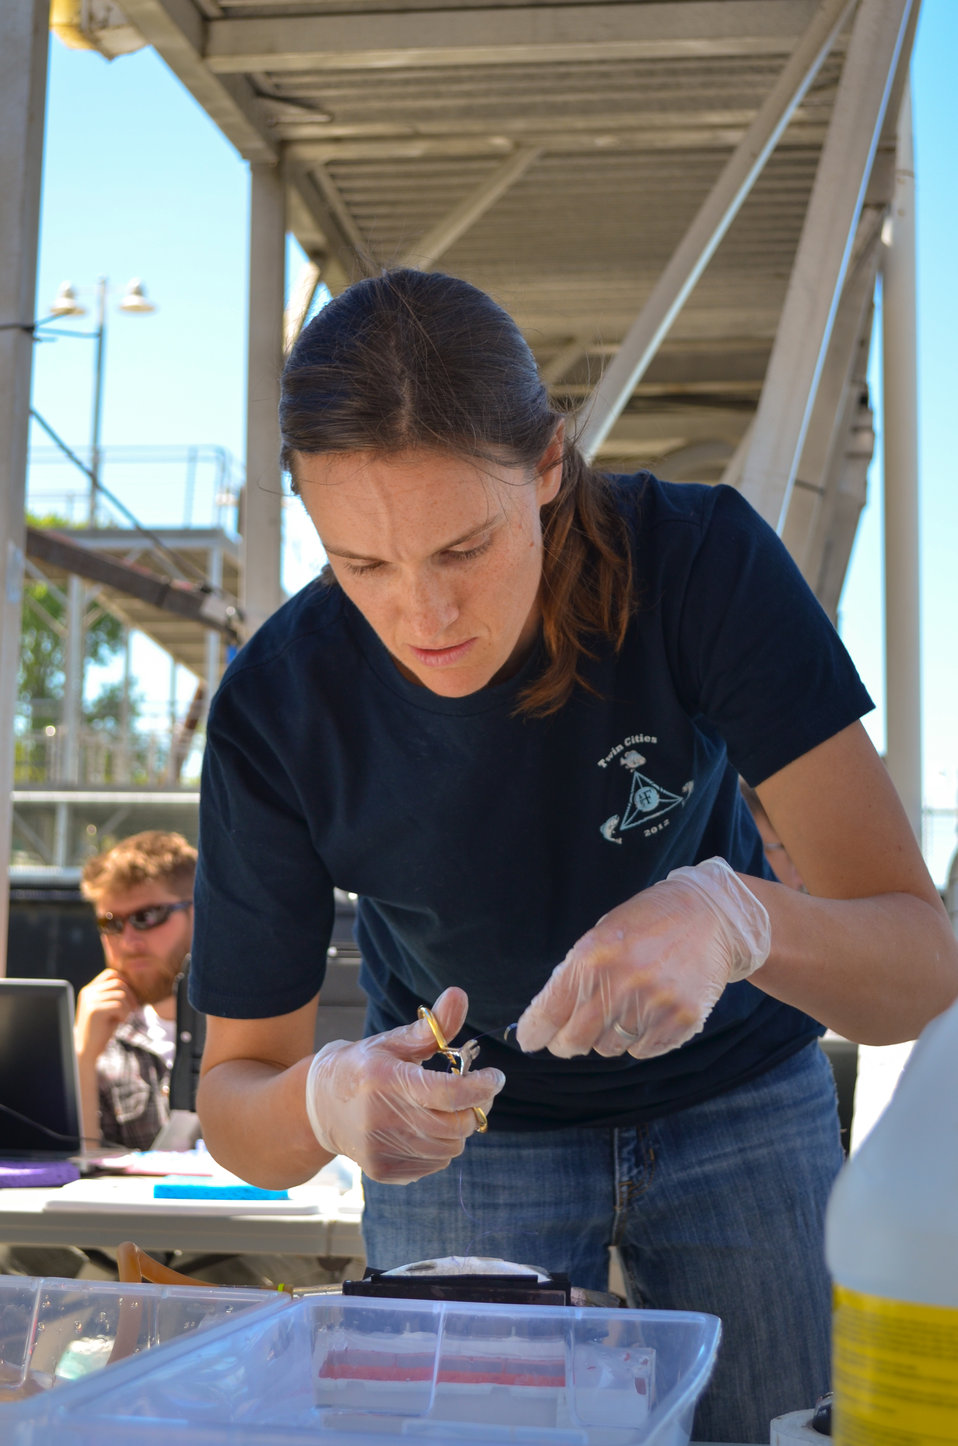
Graduate student performs fish surgery

Anna Steel, a University of California - Davis graduate student working with the U.S. Army Corps of Engineers Sacramento District surgically implants an acoustic tag into a Chinook salmon April 16, 2014 under the Tower Bridge in Sacramento, Calif. It's all part of a collaborative effort with the U.S. Geological Survey, and California’s Department of Water Resources to share fish-telemetry data from more than 5,500 tagged fish throughout the Sacramento River system. The data will help Corps researchers better evaluate habitat restoration work under the Sacramento River Bank Protection Project - a joint flood risk reduction effort between the district and the state's California Central Valley Flood Protection Board to repair river bank erosion along the Sacramento River and its tributaries.